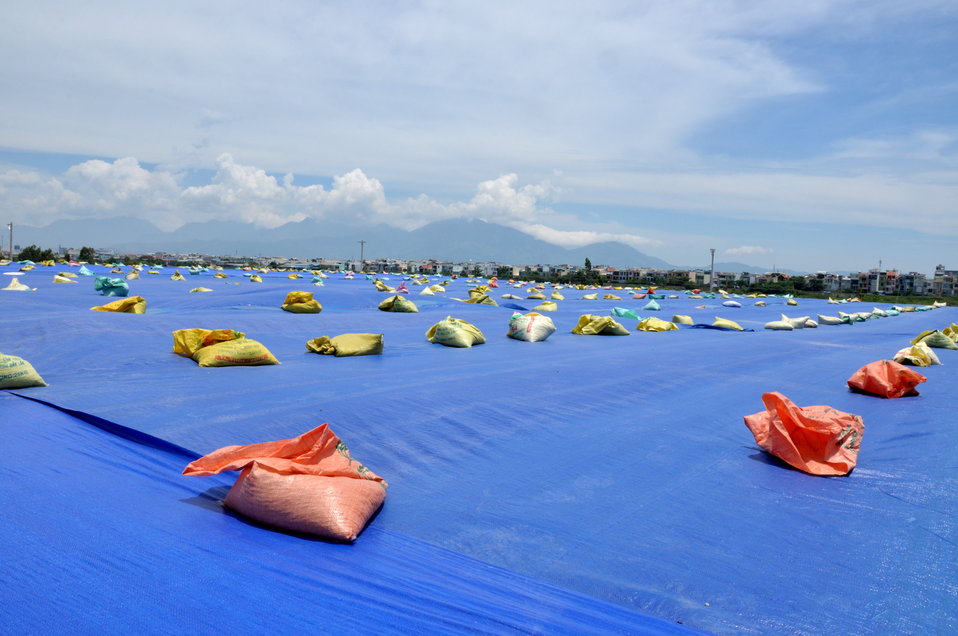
USAID Dioxin Contamination Project Progress: Containment Structure

Progress at the Environmental Remediation of Dioxin Contamination Project at Danang Airport

July 16, 2013